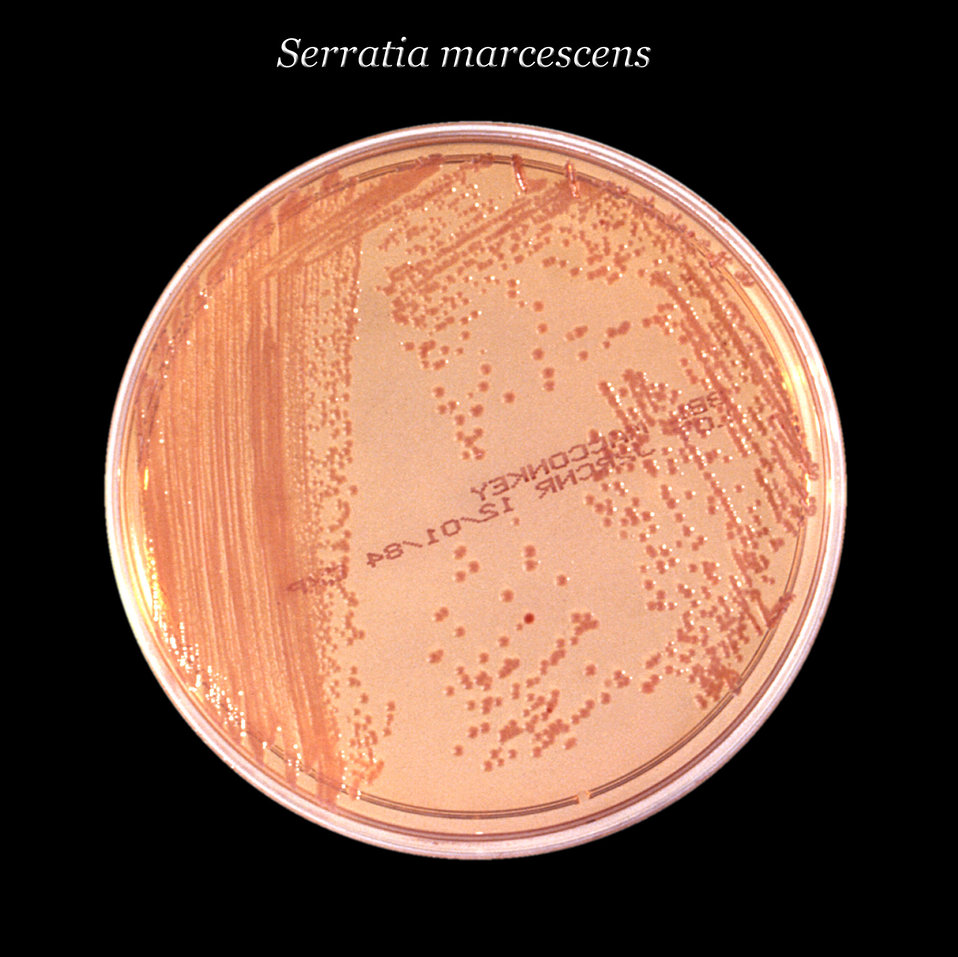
After 24 hours, this inoculated MacConkey agar culture plate cultivated colonial growth of Gram-negative, rod-shaped and facultatively anaerobic Serratia marcescens bacteria.